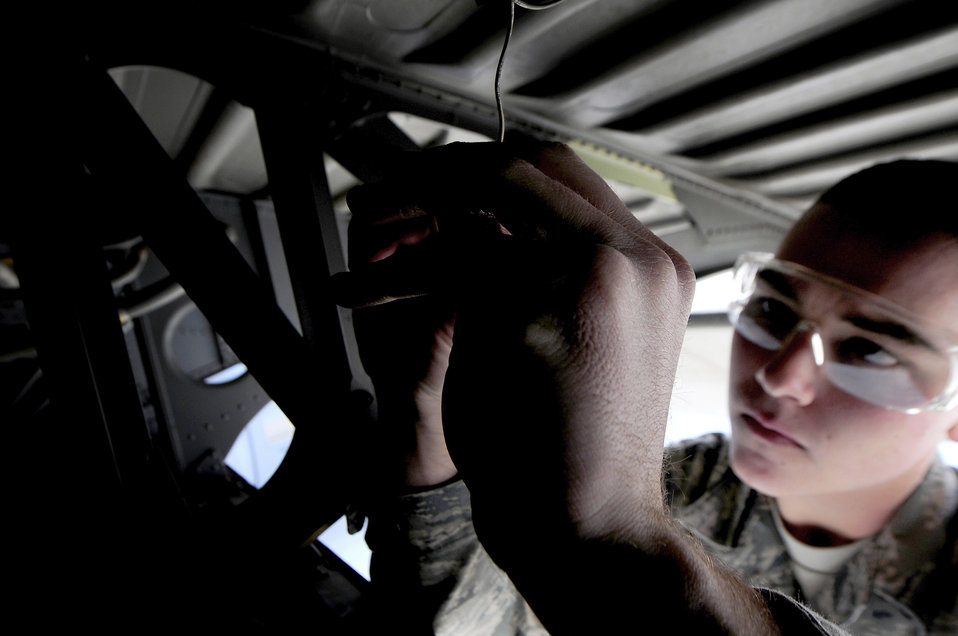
Airmen support Odyssey Dawn

Airman 1st Class Ryan Pate repairs a formation light on a C-130J Super Hercules March 25, 2011, at Ramstein Air Base, Germany, after its return from a mission in support of Operation Odyssey Dawn. Pate is assigned to the 86th Aircraft Maintenance Squadron.